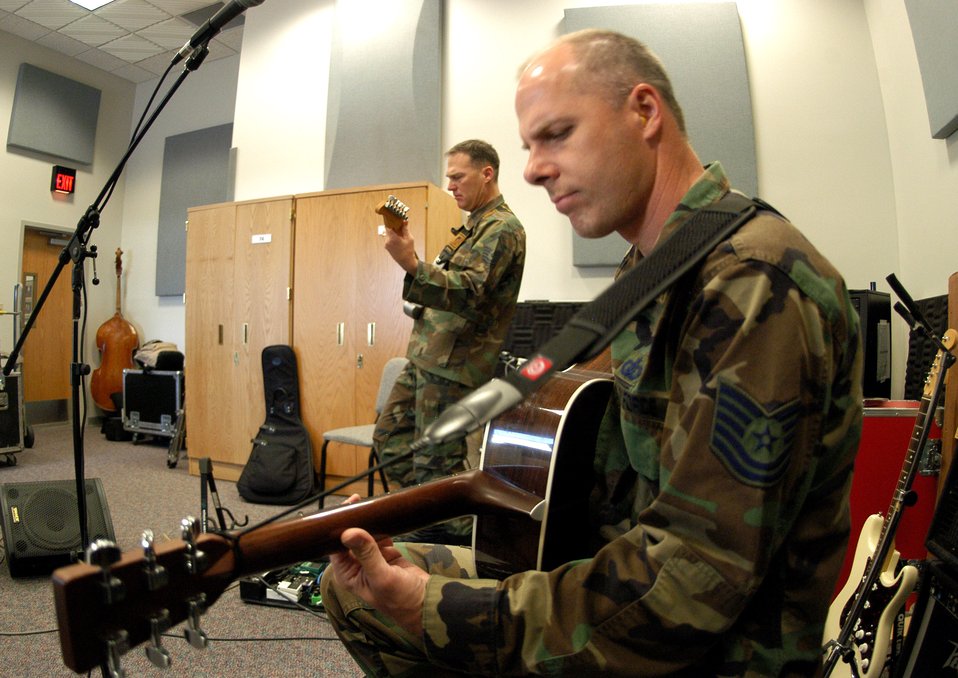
Wild Blue Country headed yonder

Guitarists Master Sgt. James Bristow and Tech. Sgt. Stephen Brannen of Wild Blue Country rehearse for the band's upcoming deployment to the Middle East. The group will bring music to several forward operating bases that have not had live entertainment.